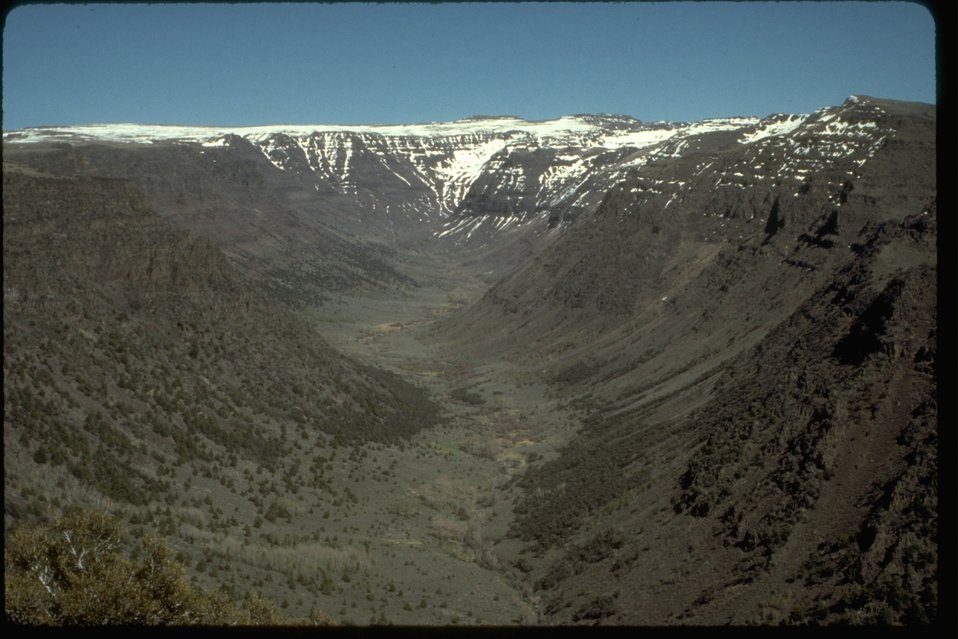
High Steens Wilderness Study Area looking into Big Indian Gorge from South Loop Road near Rooster Combs. OR 2-85F